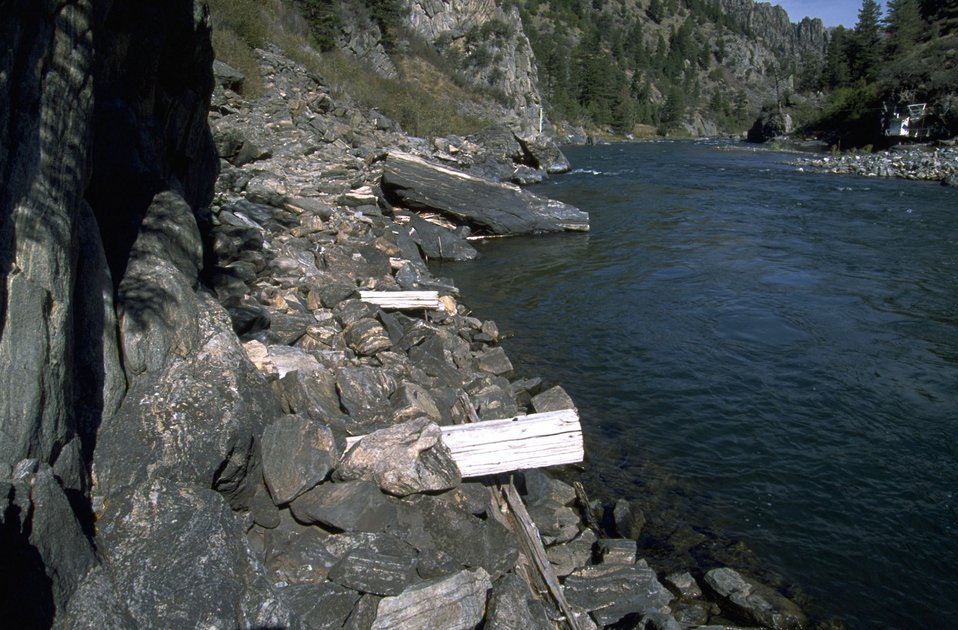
Shoreline of the Madison River